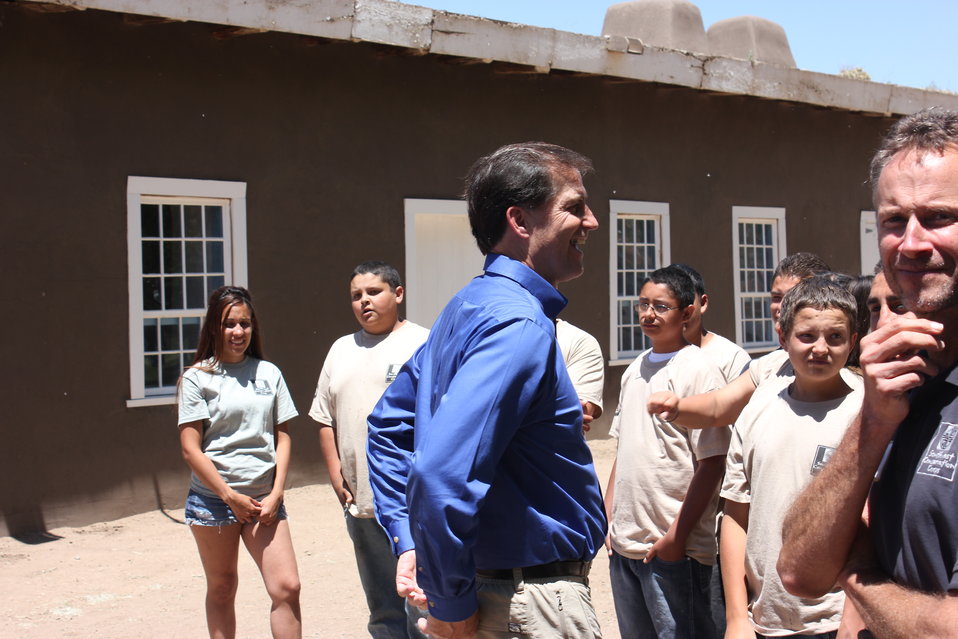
Historic Conservation Easement in Sangre de Cristo Mountains